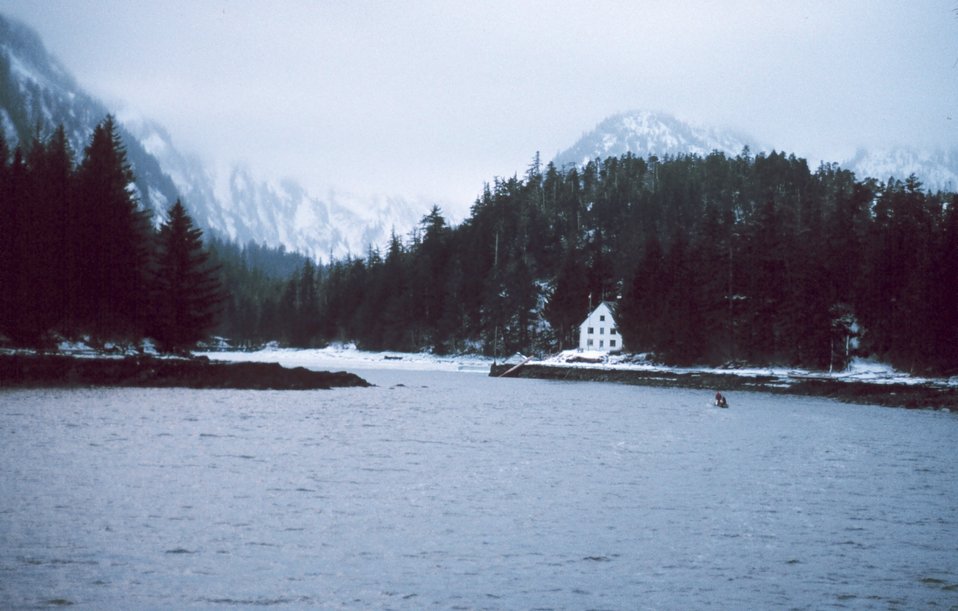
Little Port Walter in the winter